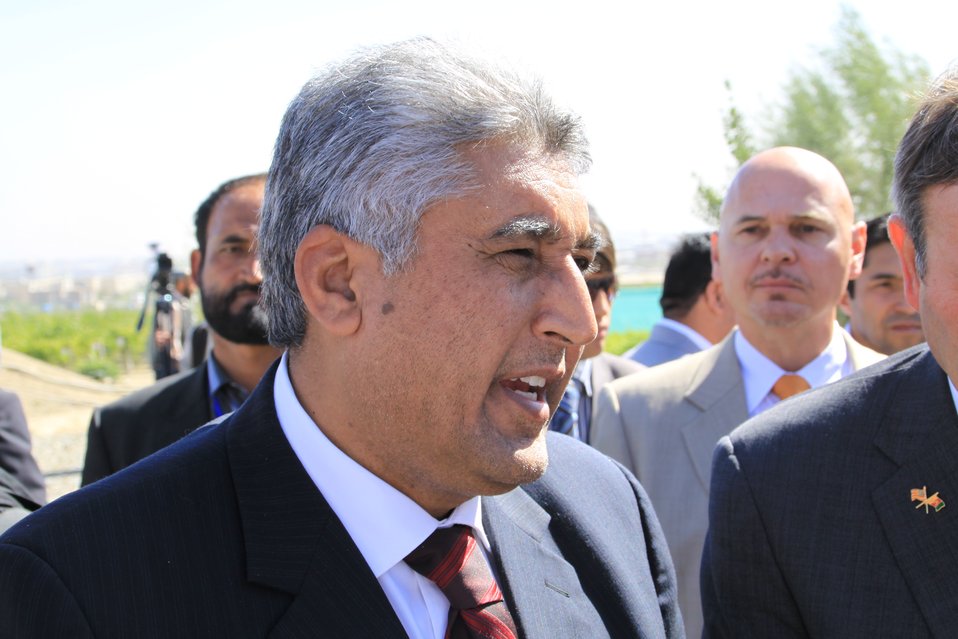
AVIPA Plus Wheat Seed Distribution 101005

US Ambassador Karl Eikenberry and USAID Acting Mission Director Kevin Brownawell joined the Minister of Agriculture, Irrigation and Livestock, H.E. Minister Mohammed Rahimi in signing a Memorandum of Understanding and distributing vouchers to area farmers for wheat and fertilizer.